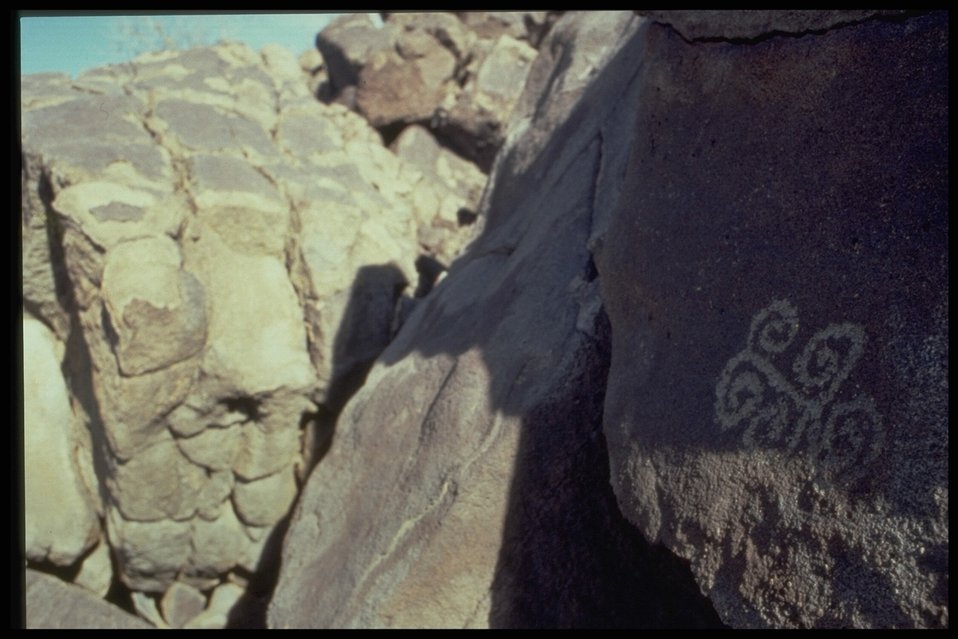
Petroglphs (Rock Art) can be found throughout the 71,000 Acres that make up the Agua Fria National Monument.